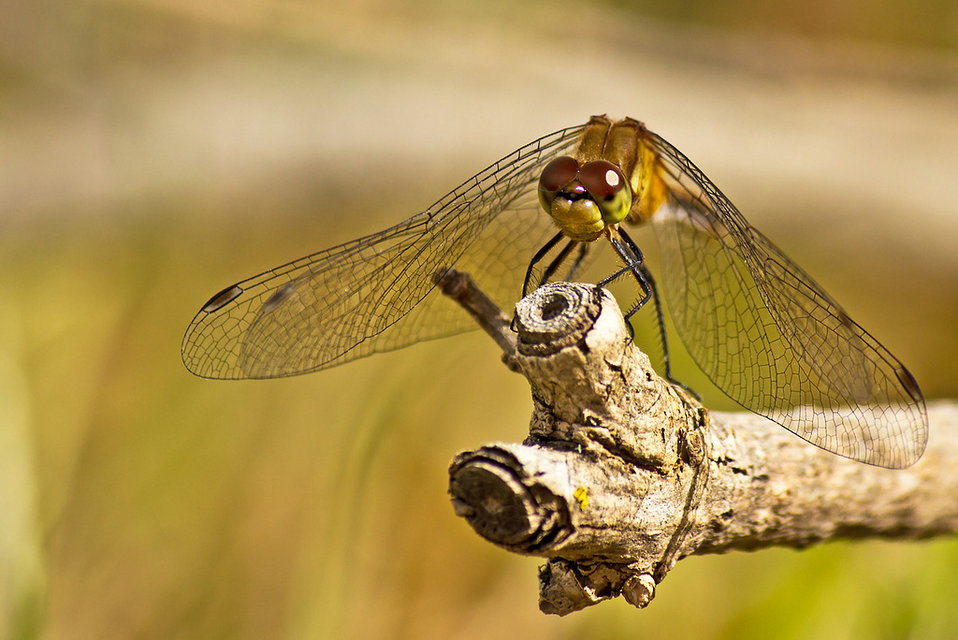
Meadlowlark dragonfly

At Rachel Carson NWR, by Steve NorrisUSFWS